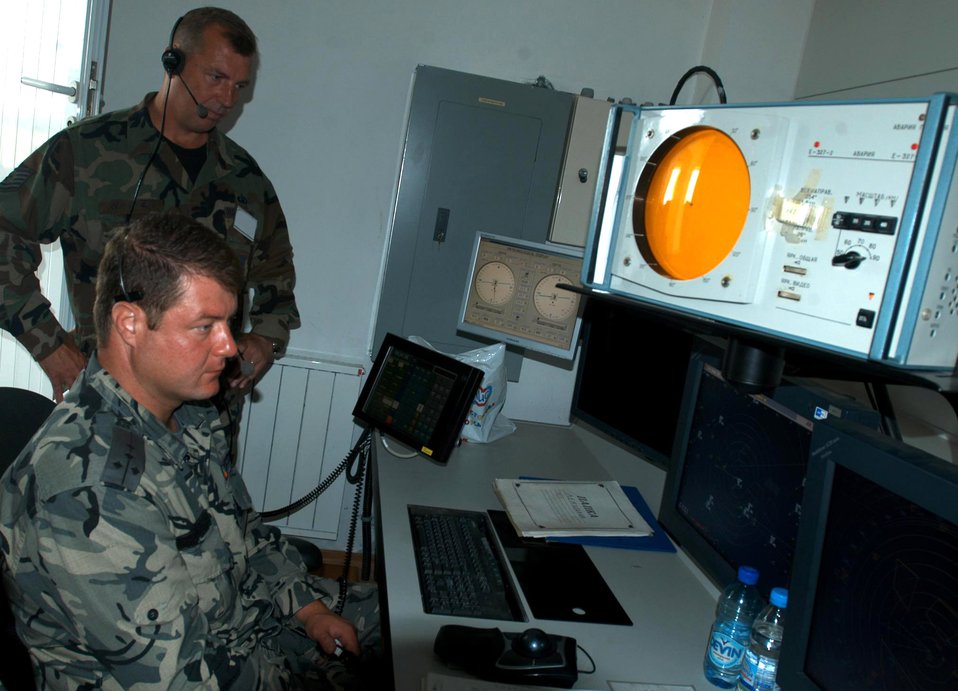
U.S., Bulgarian air traffic controllers perfect teamwork

Tech. Sgt. Richard Walker and Capt. Vesselin Aroenski watch the radar as a MiG-29 approaches the runway at Graf Ignatievo Air Base, Bulgaria. The U.S. and Bulgarian military are participating in the exercise Immediate Response 2006. Sergeant Walker is from the 48th Operations Support Squadron at Royal Air Force Lakenheath, England. Captain Aroenski is an approach instructor with the Bulgarian air force.